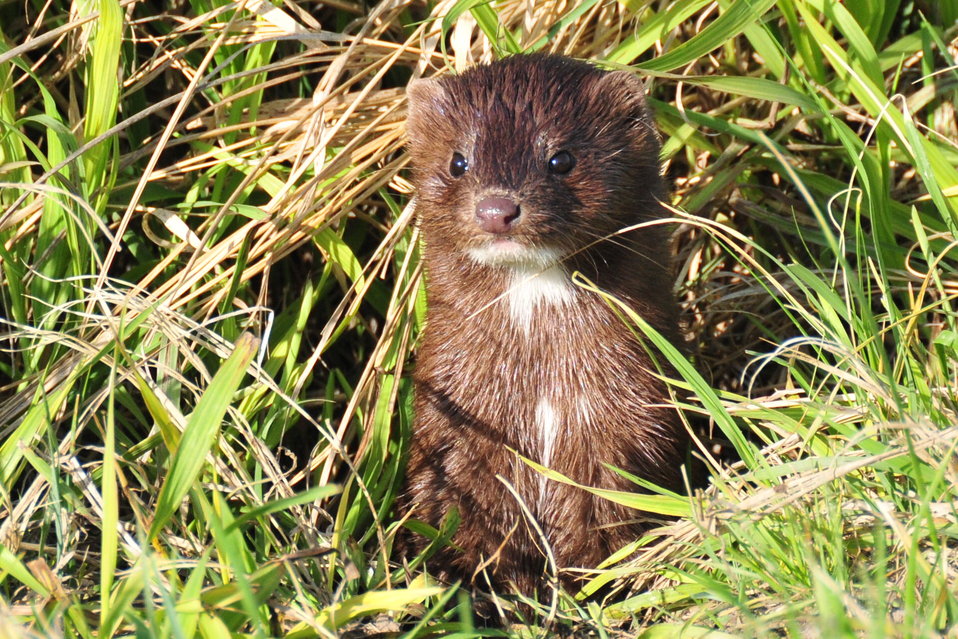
Mink on Lacreek National Wildlife Refuge 01

A mink observed on Lacreek NWR Photo: Tom Koerner/USFWS